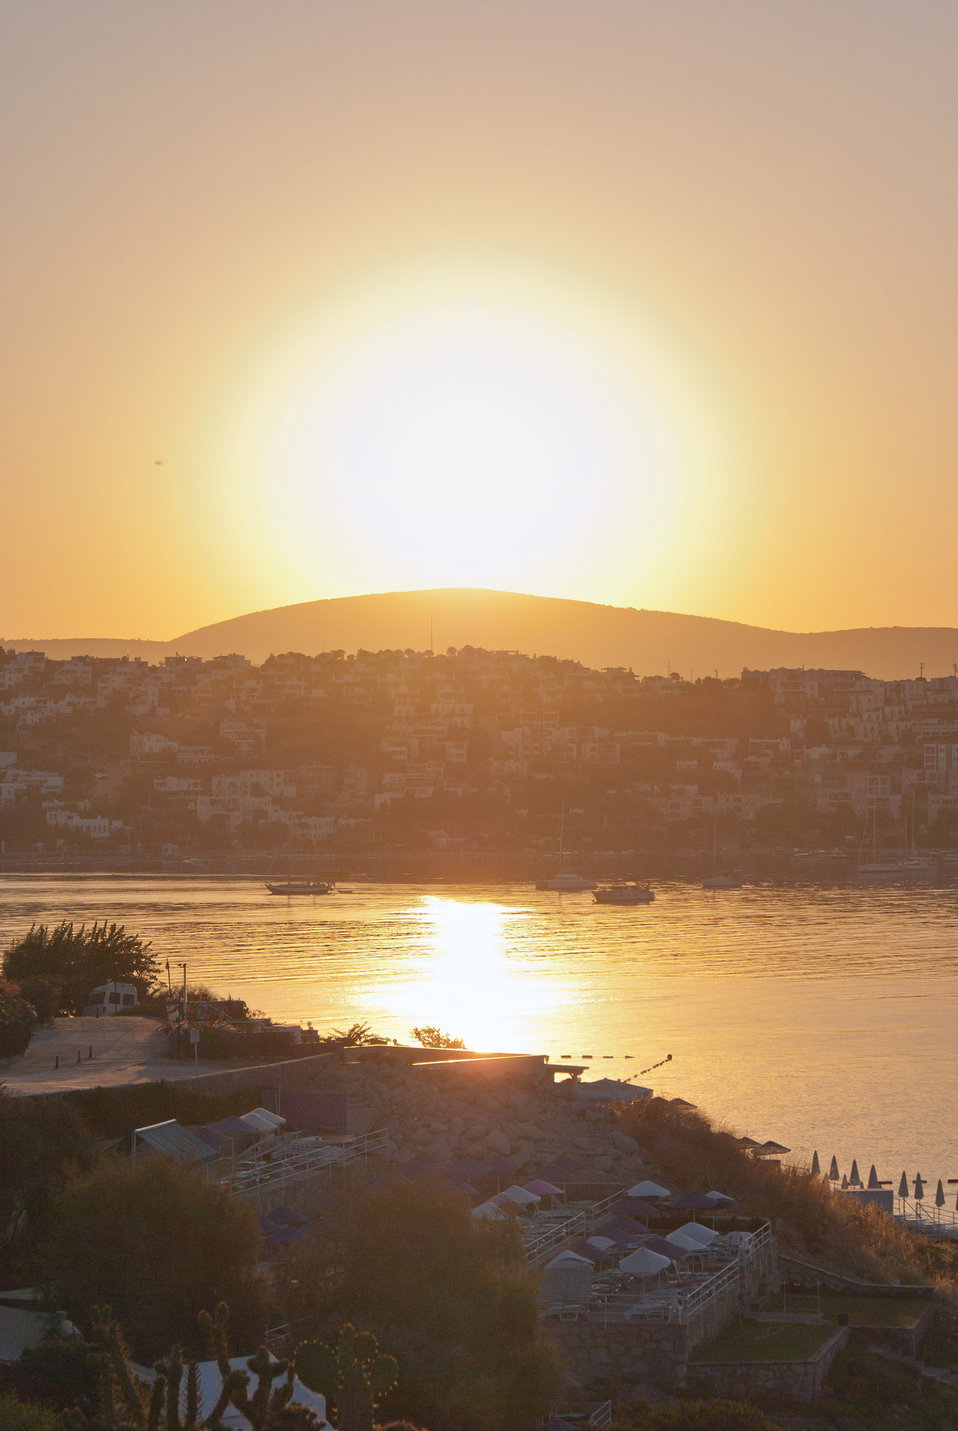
Turkey, bodrum, bitez, sunrise.